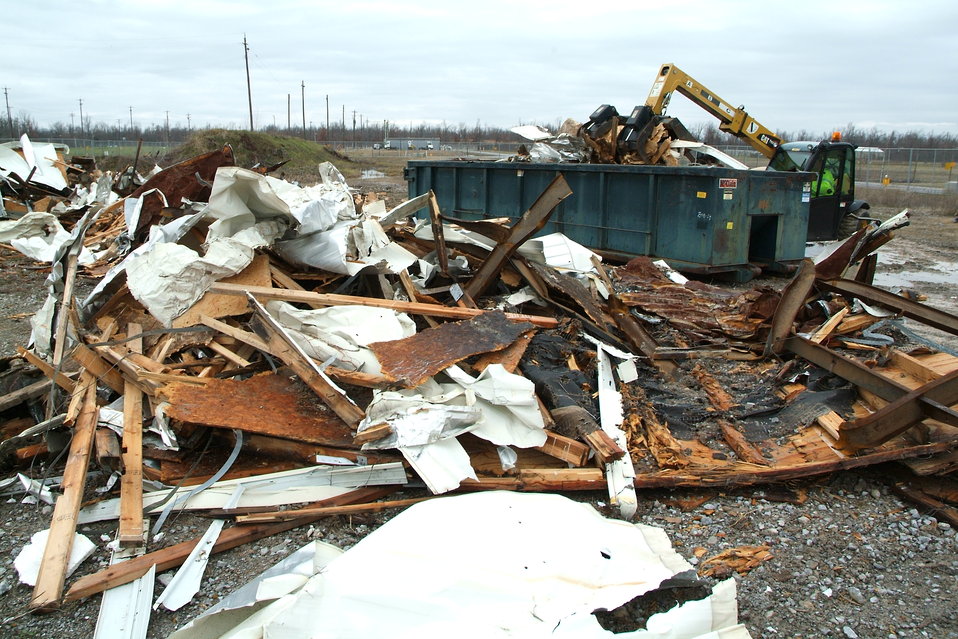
Cost-Efficient Work Rids Paducah Site of Old Facilities

Workers cut up old trailers and placed them in containers so that the debris could be placed in the site’s industrial landfill.